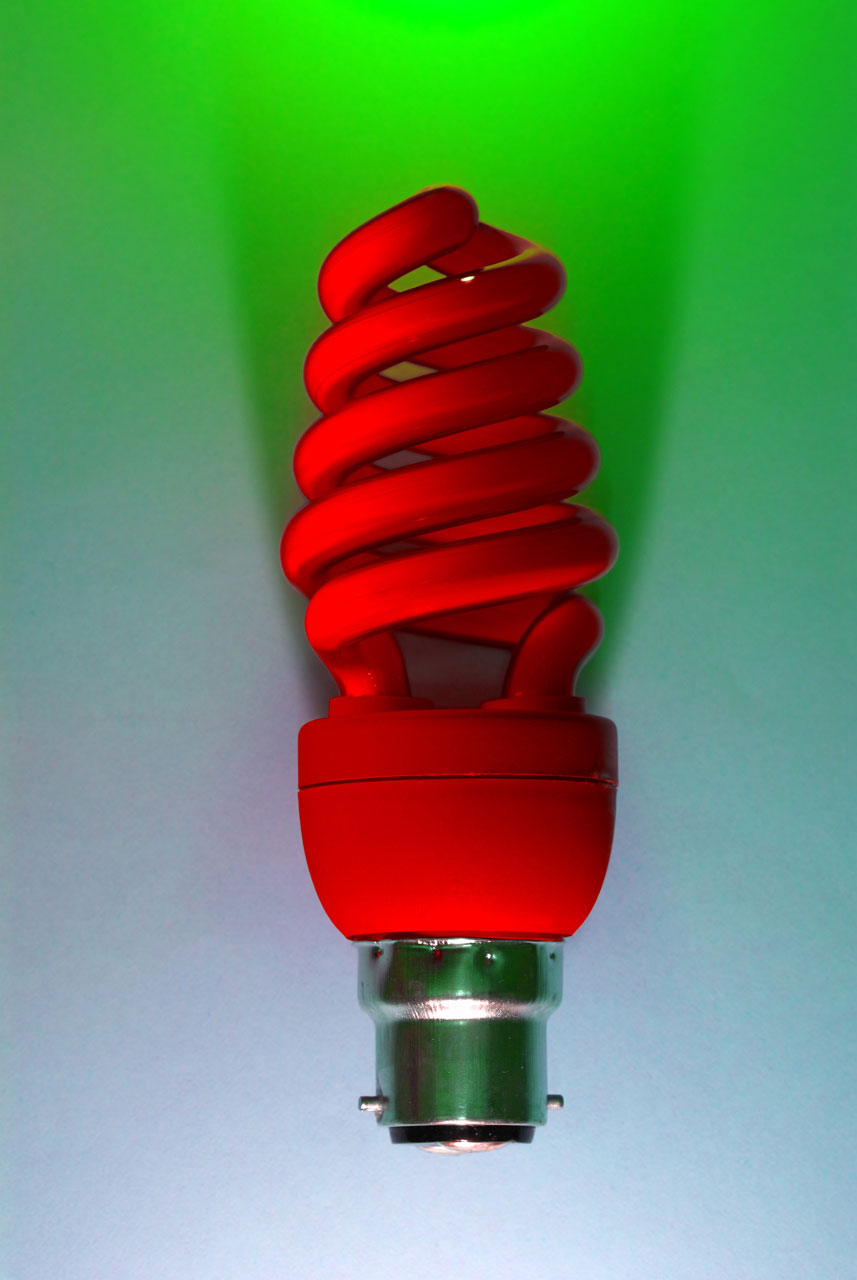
Twisted florecense

Compact fluorescent lamp.